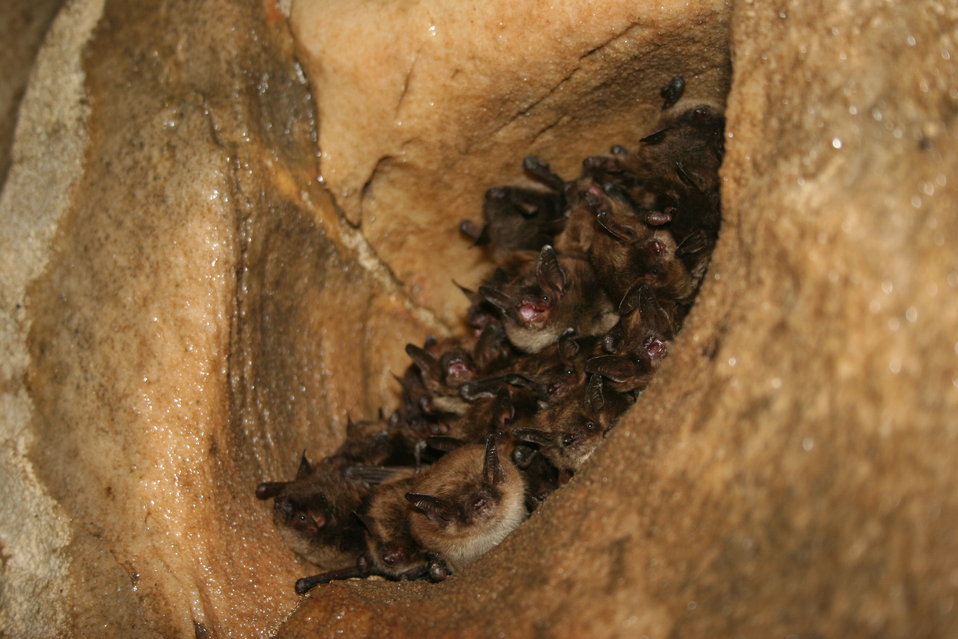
Healthy little brown bats in Mt. Aeolus Cave